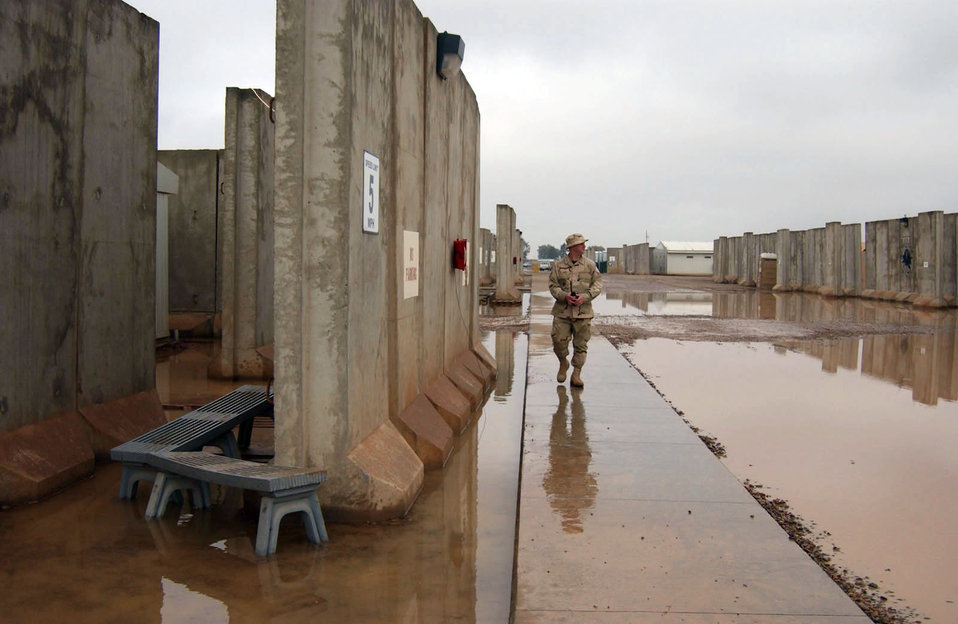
Walk Safely

BALAD AIR BASE, Iraq (AFPN) -- Tech. Sgt. Bob Brock surveys water buildup in a housing area here to ensure Airmen are not in danger of slipping and injuring themselves. He is the non-commissioned officer in charge of ground safety with the 332nd Air Expeditionary Wing.